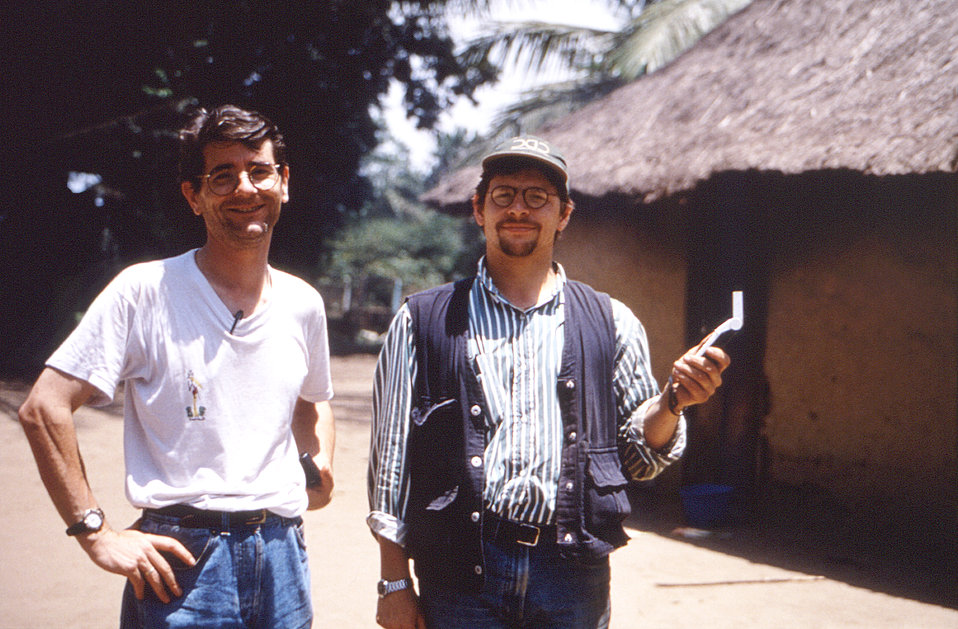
This image was created during an investigation into an outbreak of monkeypox, which took place in the Democratic Republic of the Congo (DRC), 1996 to 1997, formerly Zaire. Pictured here were CDC E.I.S. Officer, Yvan Hutin, M.D., and French epidemiologist Dr. Philippe Malfait taking a GPS reading during the team's epidemiologic travels.